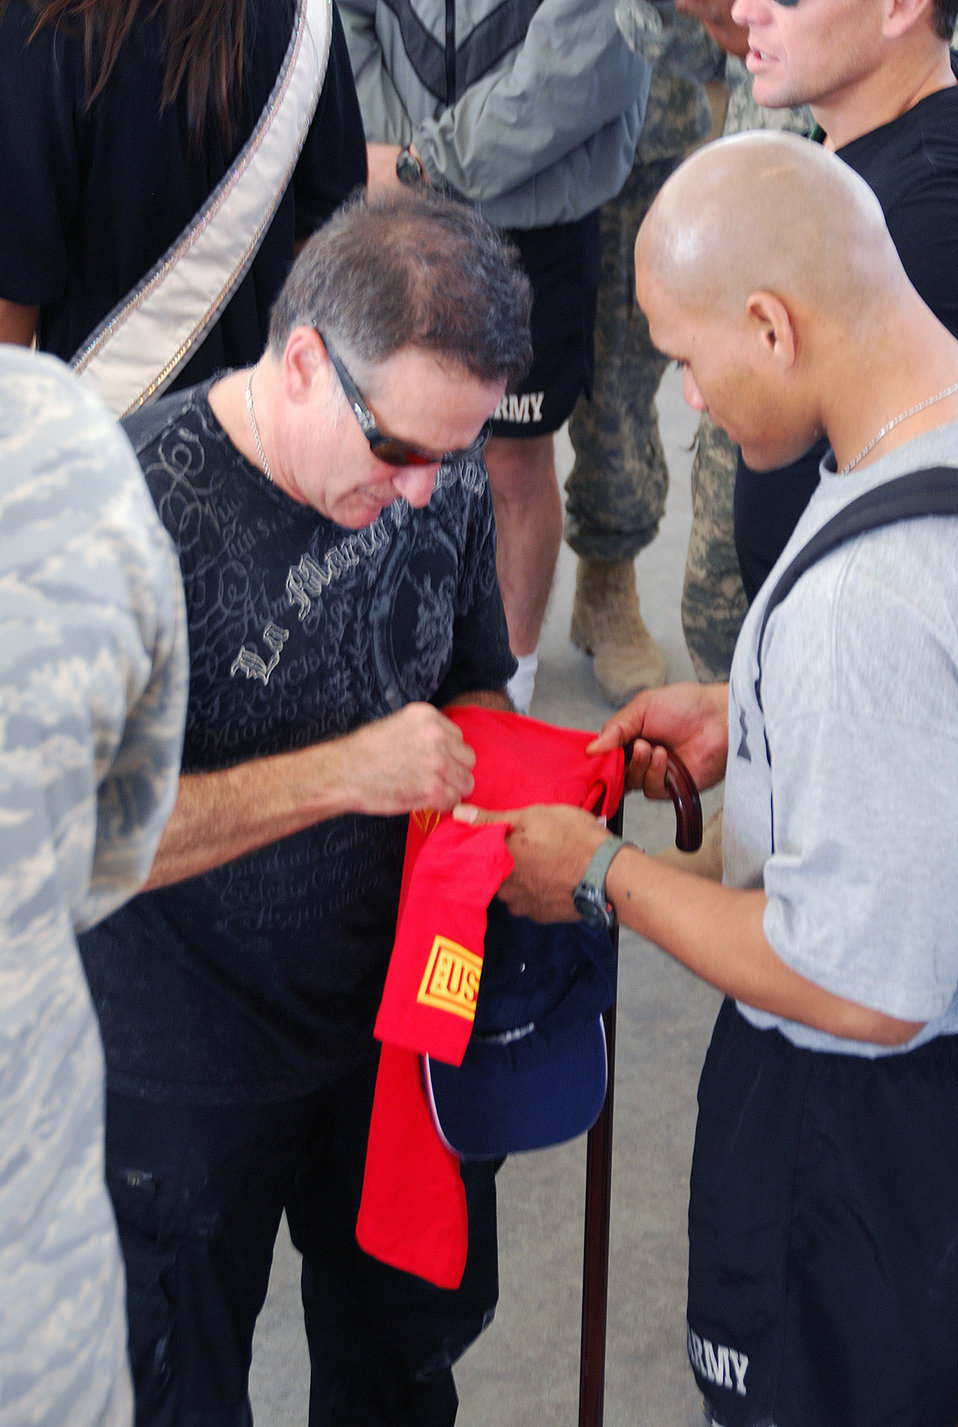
USO group visits servicemembers in Southwest Asia

Robin Williams signs a T-shirt for Army Sgt. Semeli Toilolo during a Dec. 17 appearance at a Southwest Asia air base. Sergeant Toilolo is recovering from wounds he received in a suicide bomber attack. Mr. Williams is touring with the United Service Organizations as part of the 2007 holiday tour throughout Southwest Asia. Other celebrities on the tour included Rachel Smith, Miss USA, Kid Rock, Lewis Black and Lance Armstrong.